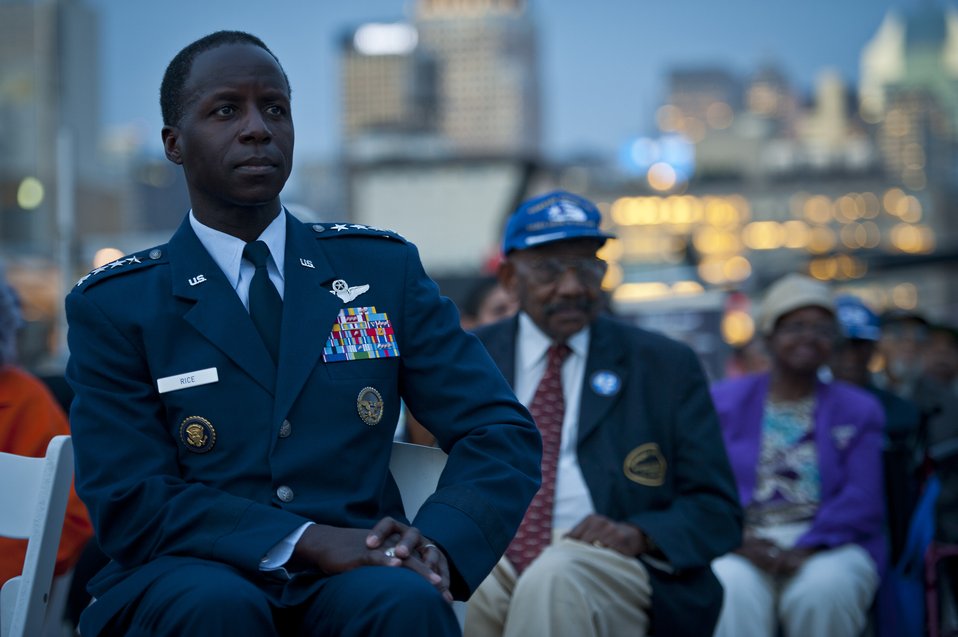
2012 Air Force Week NYC

Gen. Edward A. Rice watches the movie, Red Tails, at Pier 86 during 2012 Air Force Week in New York City, on August 20, 2012. The movie represented Tuskegee Airman missions in World War II. More than five Tuskegee Airman were present for the event. Rice is the Air Education and Training Command commander.